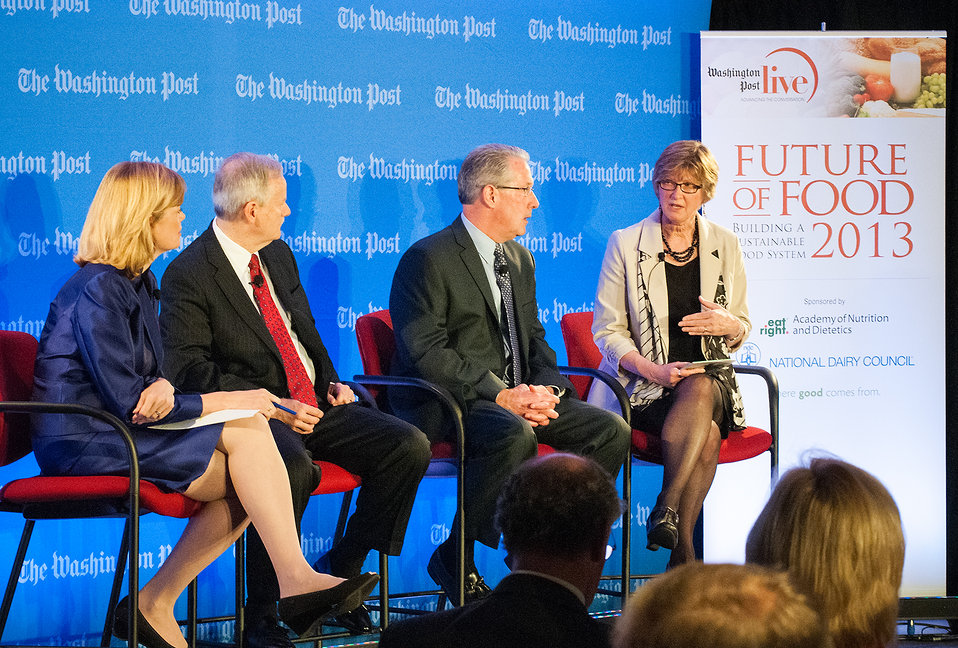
(L to R) Washington Post Live Editor Mary Jordan, United Fresh Produce Association President and Chief Executive Officer (CEO) Tom Stenzel, Dairy Farmers of America President and Chief Executive Officer (CEO) Rick Smith, and National Corn Growers Association President Pam Johnson chaired the panel, From the Farm: Innovations and the Latest Advances in Food Production, during the annual live forum, “Future of Food: Building a Sustainable Food System 2013,” sponsored by the Washington Post Live in Washington, D.C. on Wednesday, May 22, 2013. Agriculture Secretary Tom Vilsack, leading agricultural, government and nutrition experts discussed expanding healthy, sustainable food systems including public-private partnerships, the market’s role in nutrition and the future of agricultural innovation.